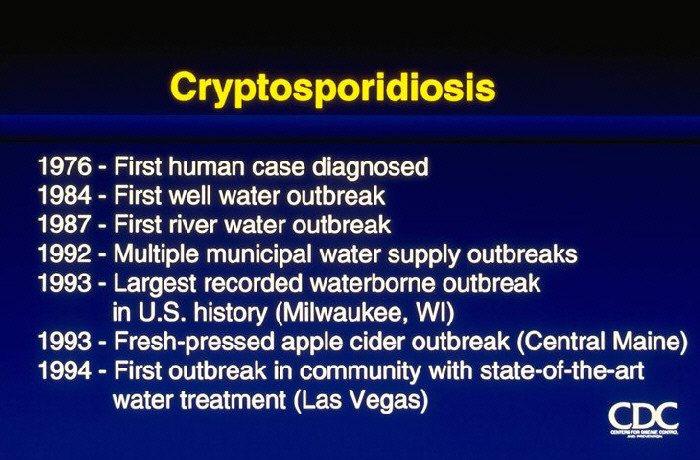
Cryptosporidiosis (chronology)